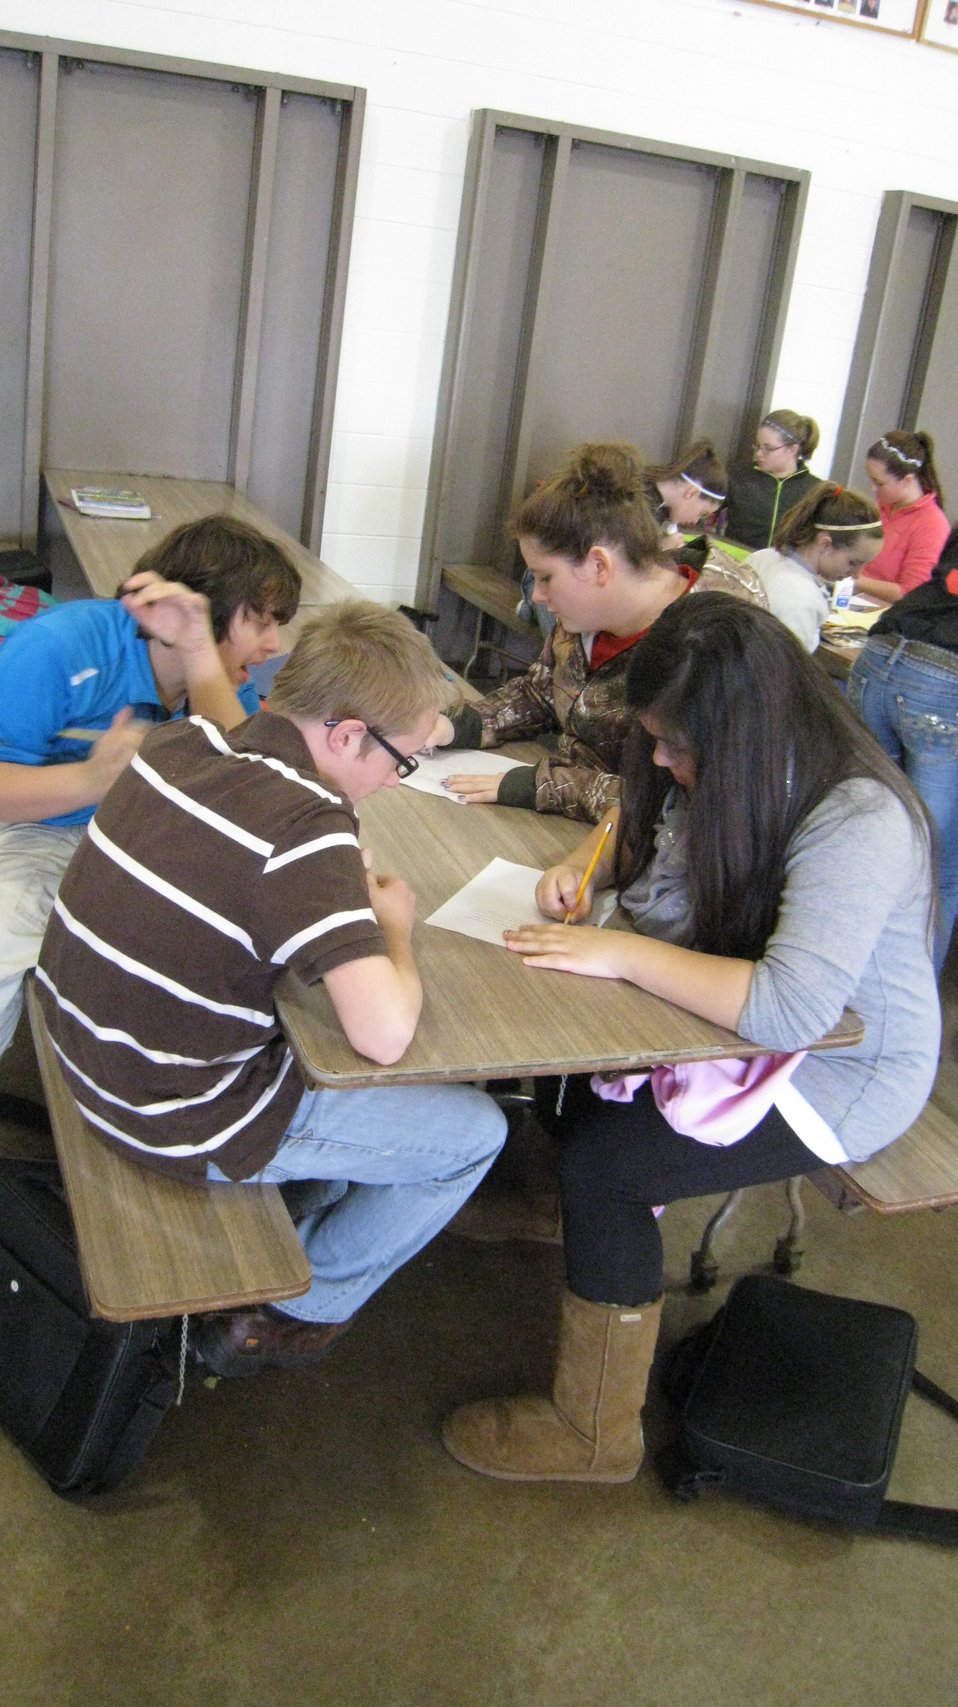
I'm Shattering the Myths Because...

Teenagers from the Van Buren County SAFE Coalition's, Youth Leadership Council (YLC) in Keosauqua, Iowa participate in various events during National Drug Facts Week, 2014.